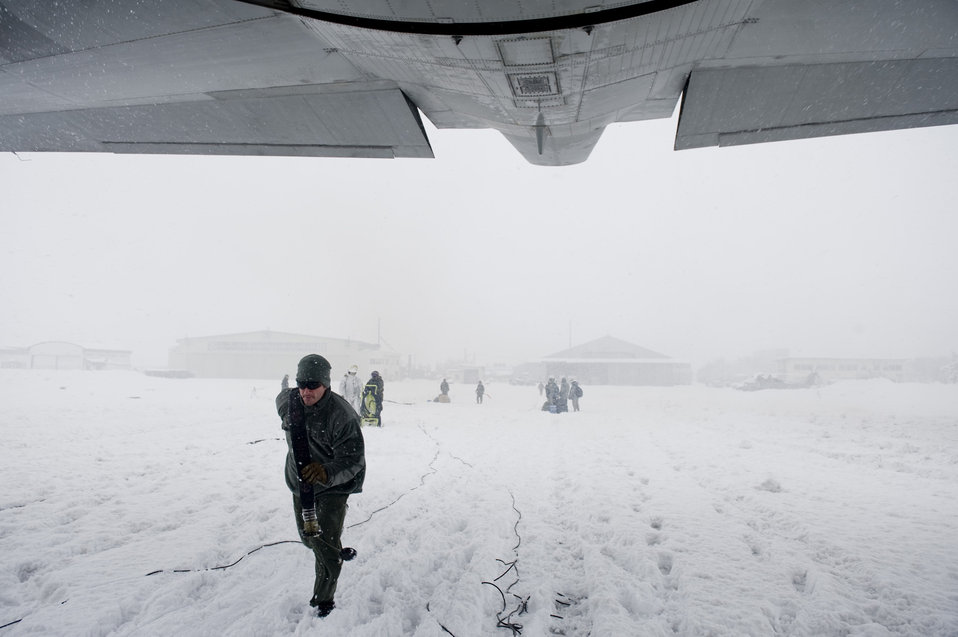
FARP ready at Yamagata Airport

Tech. Sgt. Paul Hammer runs a fuel line to a MC-130P Combat Shadow March17, 2011, at Yamagata Airport, Japan, during efforts to establish a forward area refueling point there. FARPs allow aircraft to operate at further distances by allowing the aircraft to refuel where no fuel typically exists. The fuel at Yamagata Airport will be used for American search-and-recovery teams during Japan's earthquake and tsunami relief. Sergeant hammer is with the 353rd Special Operations Group at Kadena Air Base, Japan.